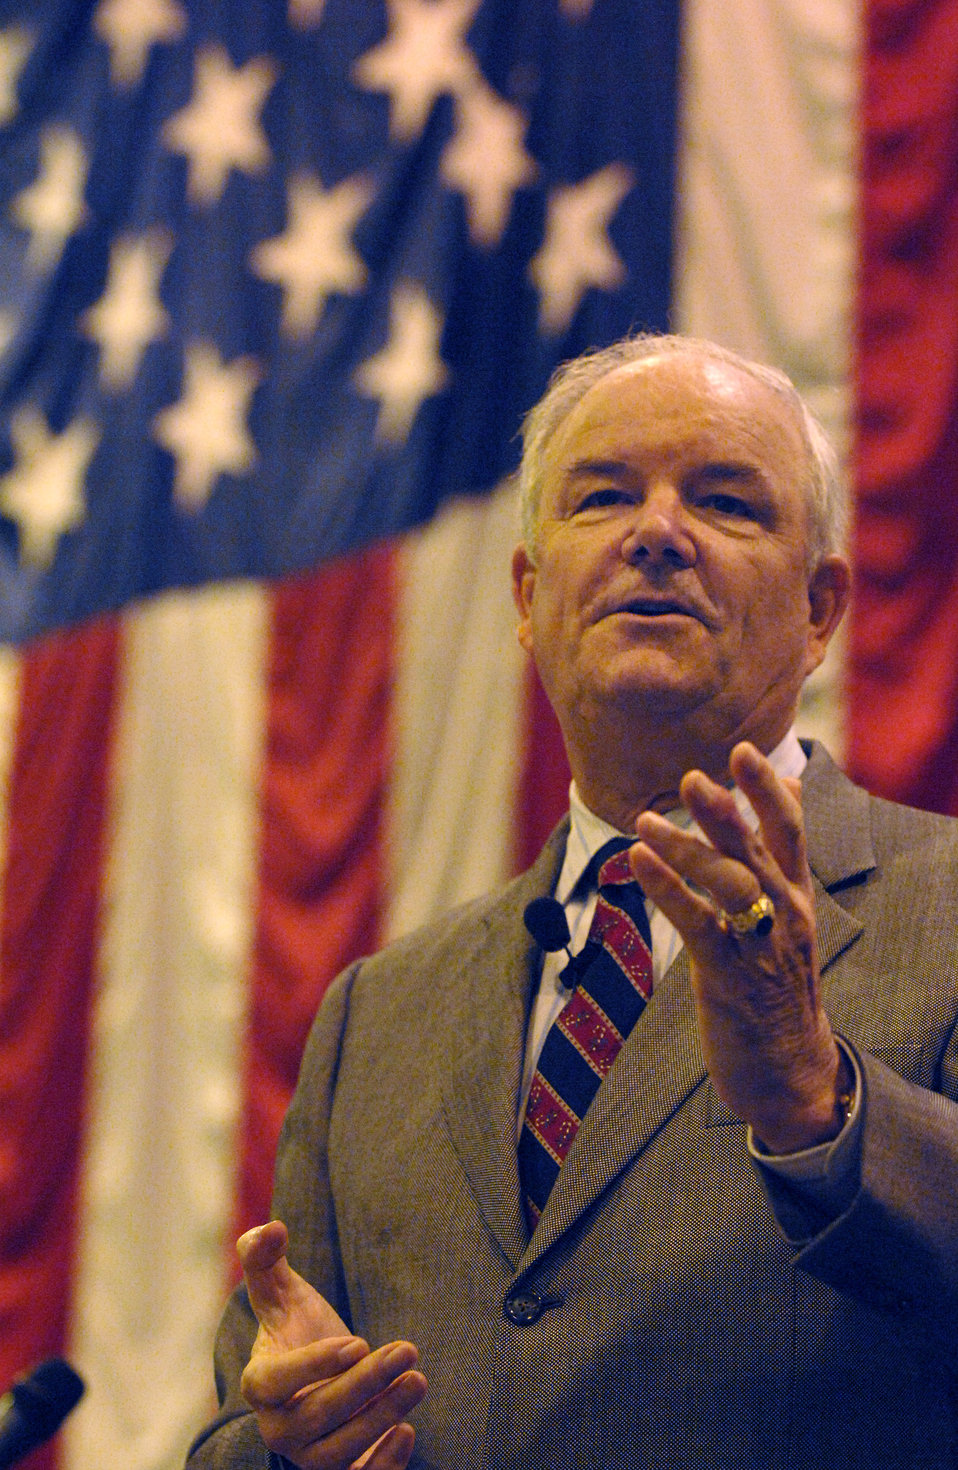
Secretary Wynne visits Aviano

Secretary of the Air Force Michael W. Wynne talks to Airman to get an orientation of the 31st Fighter Wing Mission Dec. 5 at Aviano Air Base, Italy. Secretary Wynne is responsible for the affairs of the Department of the Air Force, and ensures the Air Force can meet its current and future operational requirements.